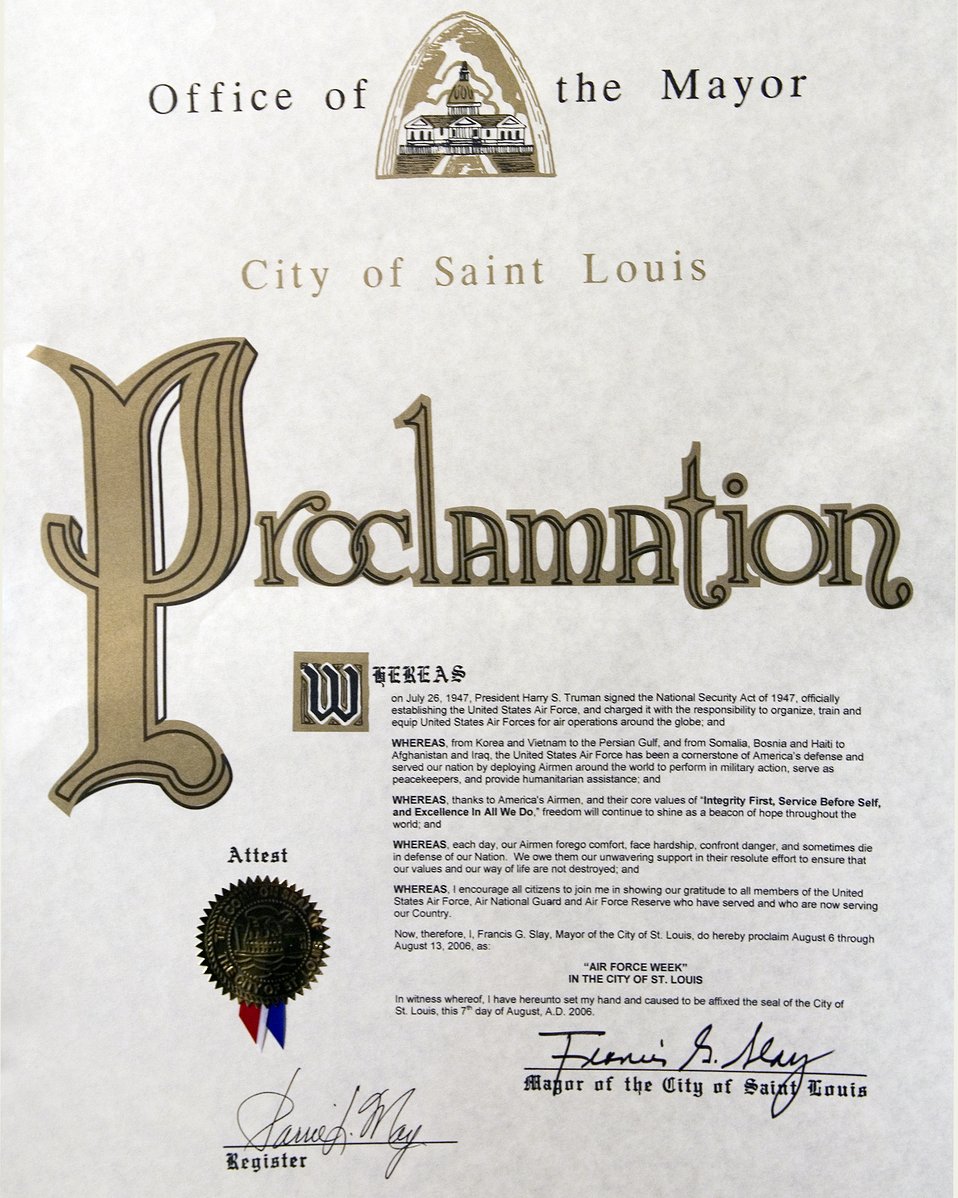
Proclamation declares Air Force Week

A proclamation signed today by the St. Louis mayor declares Aug. 6-13 as Air Force Week in St. Louis.